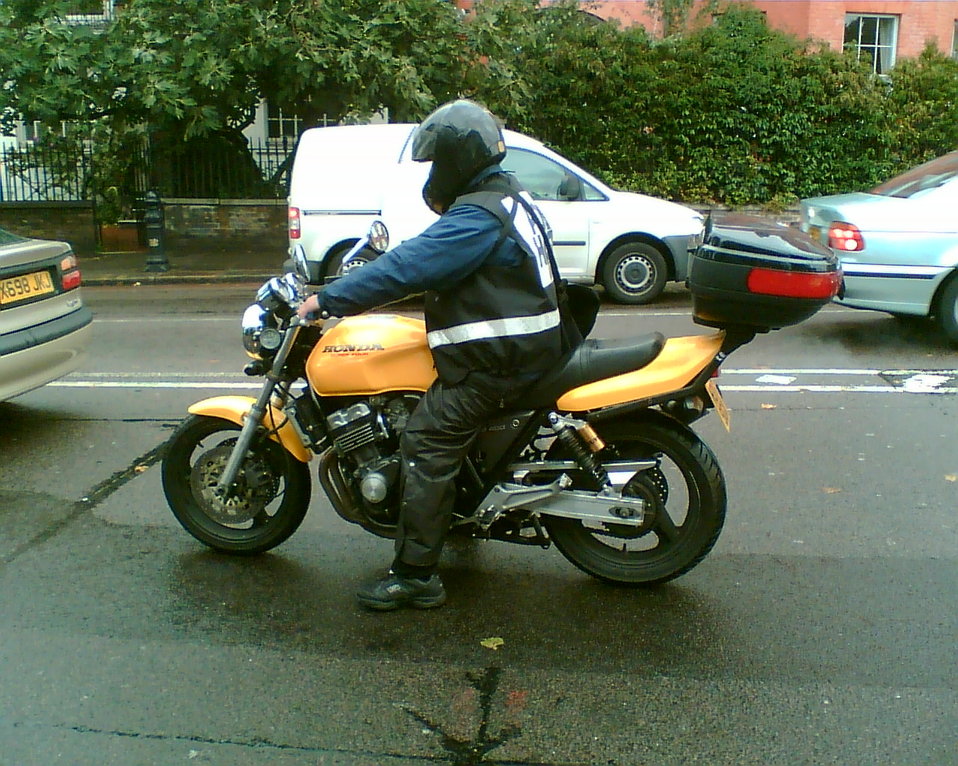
Motorcycle courier, London 2007. (Taken with Nokia 6230i by Battersea Bridge).